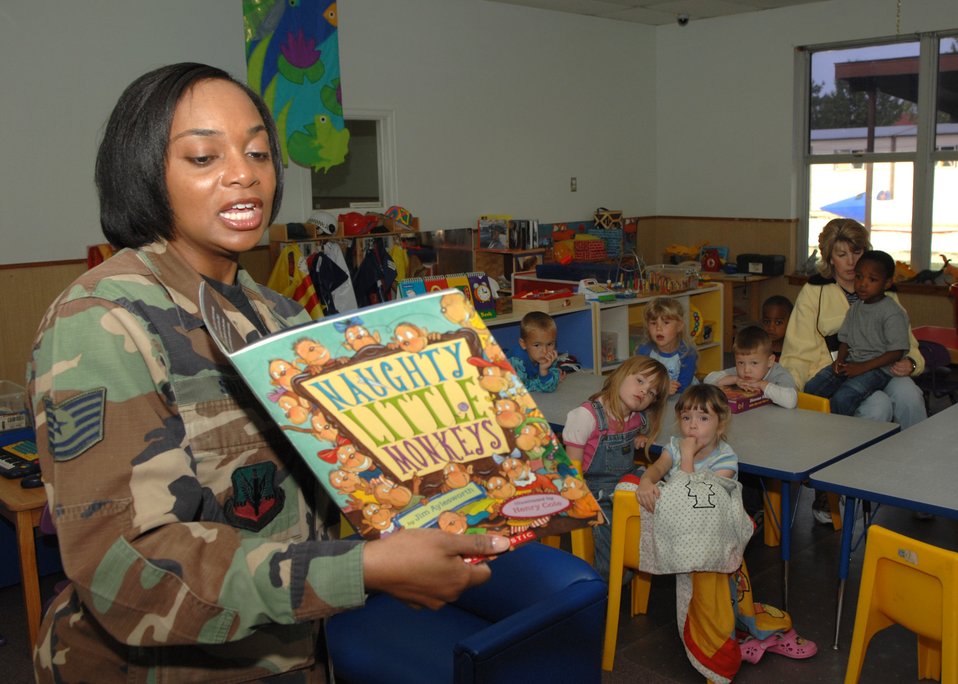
Tell me a story

Tech. Sgt. Daphne Soto reads to children April 6 at the child development center on Barksdale Air Force Base, La. April is the Month of the Military Child, and in celebration of that, the CDC is holding a month of special events. This week was pajama party story time.